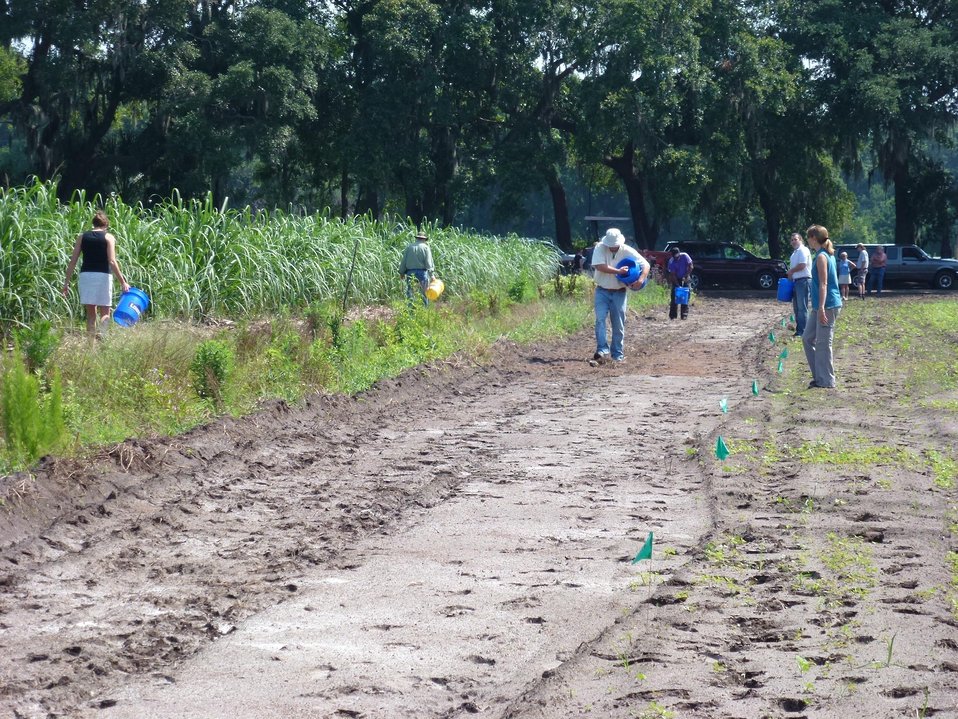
P1030983 broadcasting seed at Dirt Works Incubator Farm near Charleston SC during pollinator training June 2012

Participants spread wildflower seeds by hand to establish beneficial pollinator habitat at Dirt Works Incubator Farm on John’s Island, in Charleston, SC. The U.S. Department of Agriculture’s (USDA) Natural Resources Conservation Service (NRCS) in South Carolina and the Xerces Society, with the support of a Sustainable Agriculture Research and Education grant, are promoting the benefits of pollinators through hands-on workshops targeted to employees of NRCS, soil and water conservation districts, cooperative extension agents and others involved in agricultural production.